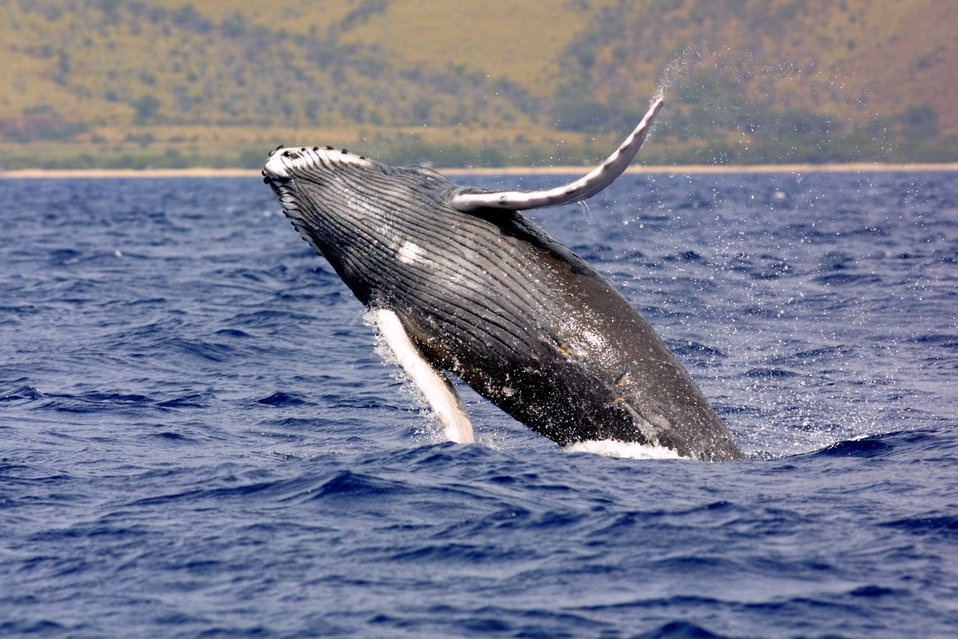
A breaching humpback whale.